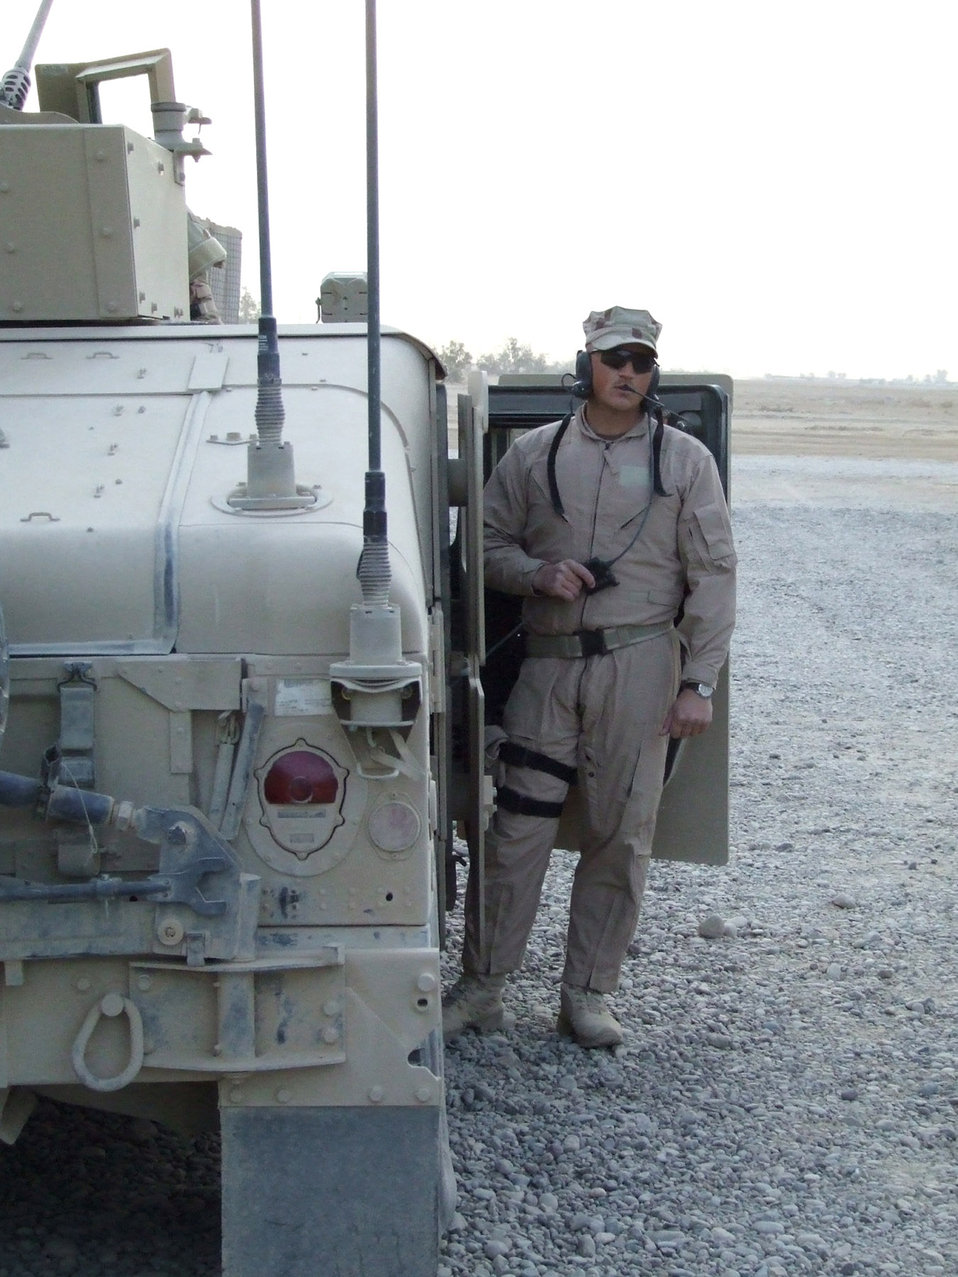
Airmen train Iraqi police

Staff Sgt. Michael Cowan prepares to lead a convoy from Contingency Operating Base Speicher, Iraq. Deployed from the 43rd Security Forces Squadron at Pope Air Force Base, N.C., Sergeant Cowan is assigned to the 732nd Expeditionary Security Forces Squadron's Detachment 6. The detachment sends convoys out daily to assess the capability of Iraqi police stations in the Salah ad Din province.